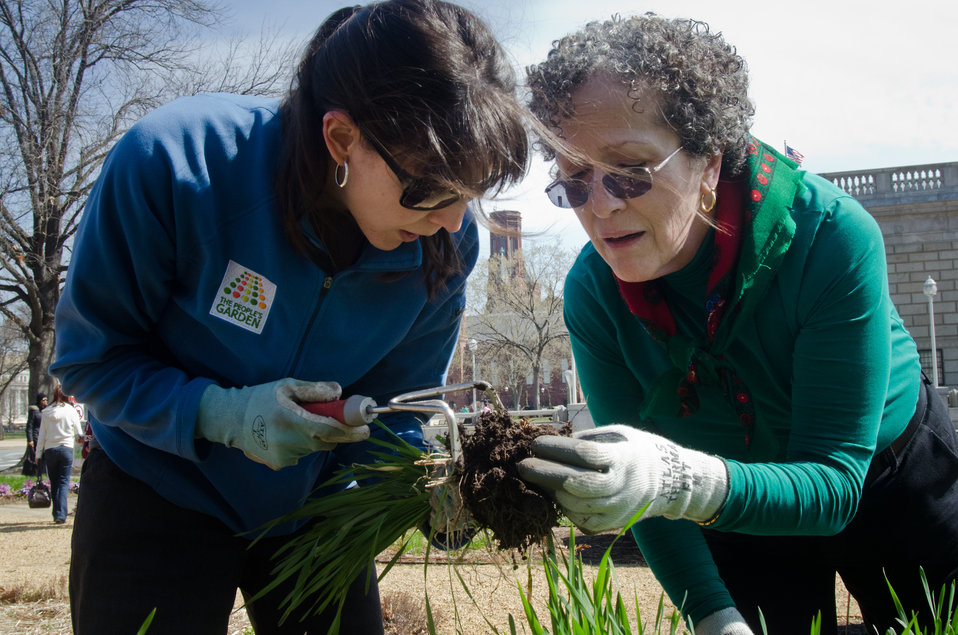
U.S. Department of Agriculture (USDA) National Organic Program, Agricultural Marketing Specialists Stacy Jones (left) and Lee Cliburn were puzzled about a cluster of shells that turned out to be remains of rye seeds planted last year in The People's Garden in Washington DC., on Thursday, March 17, 2011. They are volunteers who pitch to do garden work. Located on the corner of Jefferson Dr. SW and 12th St. SW, people often stop to ask questions about the garden. Part of the volunteers’ training is to be a spokesperson for the People's Garden Initiative, an effort by the USDA that challenges its employees to establish People's Gardens at USDA facilities worldwide or help communities create gardens. People's Gardens vary in size and type, but all have a common purpose - to help the community they're within and the environment.